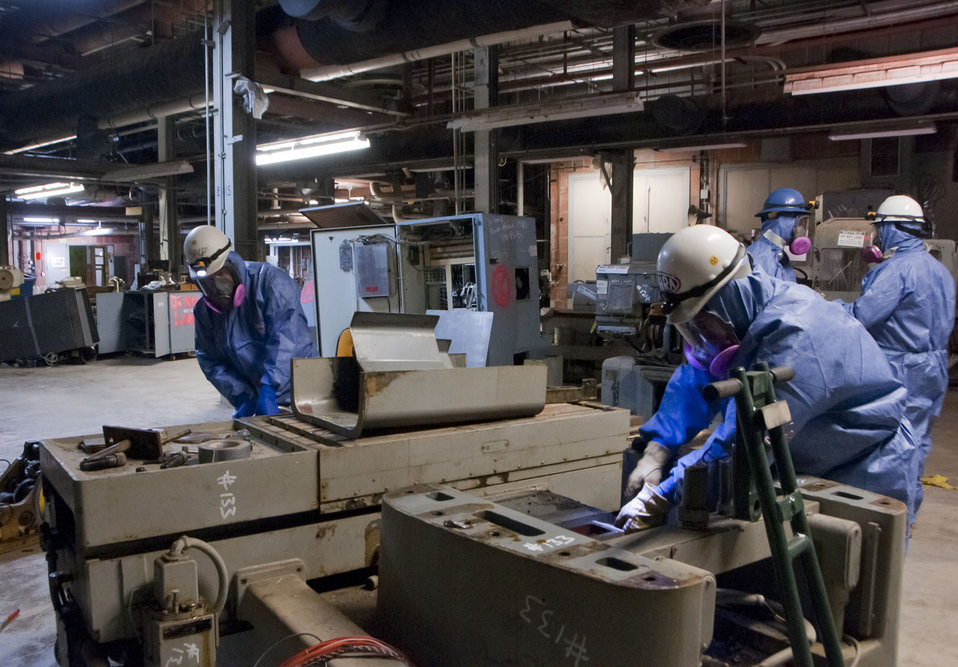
Skilled Workers Bruised by Recession Find New Start in Oak Ridge Recovery Act Work

Workers are preparing Alpha 5, a 613,000-square-foot former production facility, for eventual demolition by removing and disposing of legacy materials. The project includes dismantling legacy production equipment in contaminated areas.